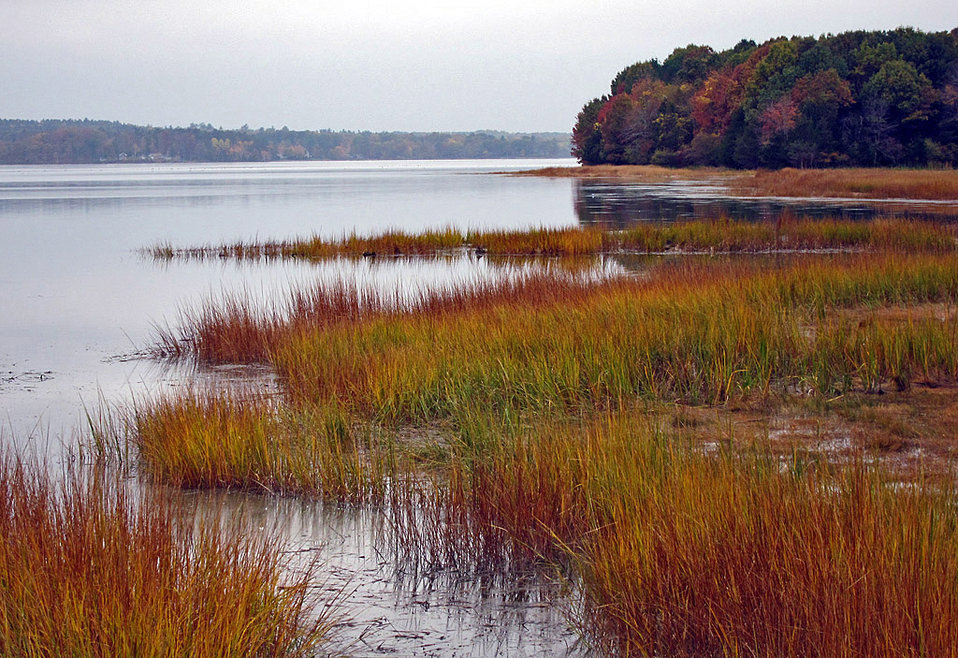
Salt marsh

Great Bay National Wildlife Refuge, MA.